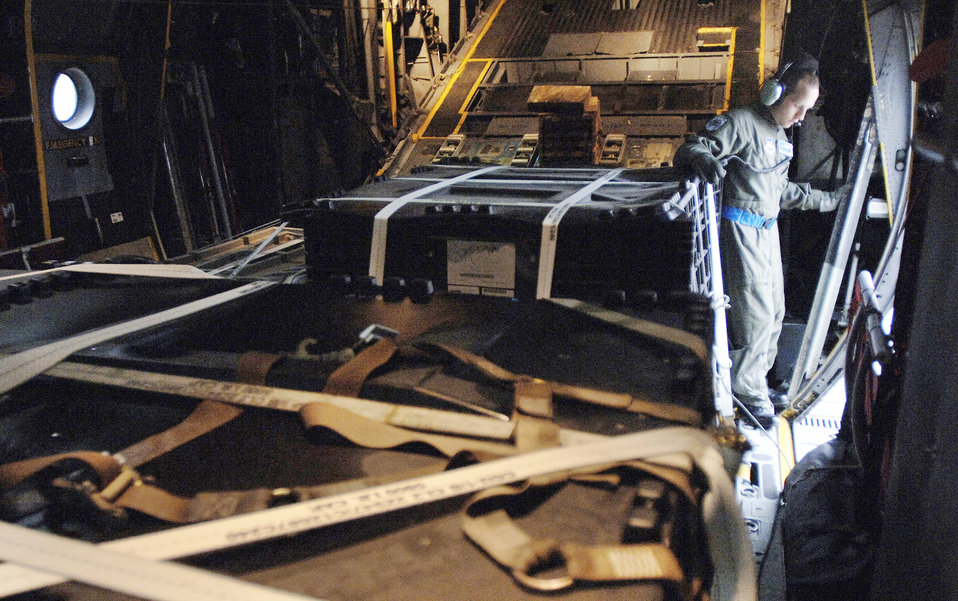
C-130 arrival in Poland marks end, new beginning

Staff Sgt. Josh Woolridge flies aboard the last E-model C-130 Hercules to officially depart Ramstein Air Base, Germany, Nov. 2, 2009. Sergeant Woolridge is a C-130 loadmaster.